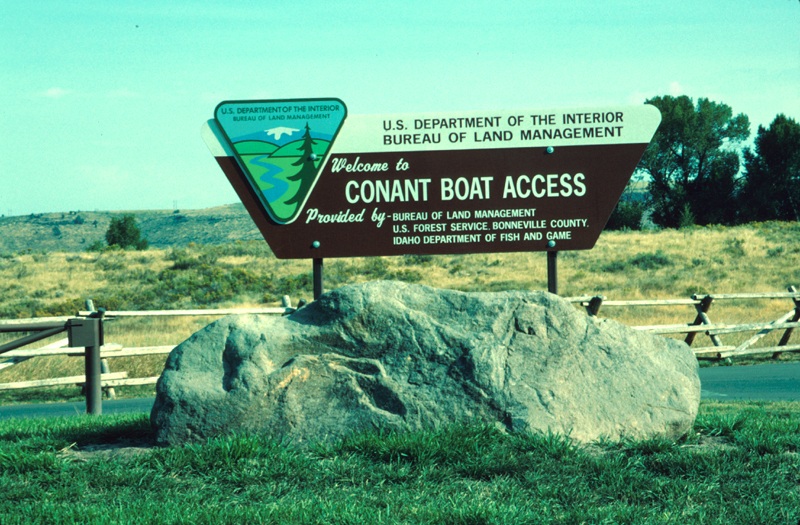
South Fork of the Snake River